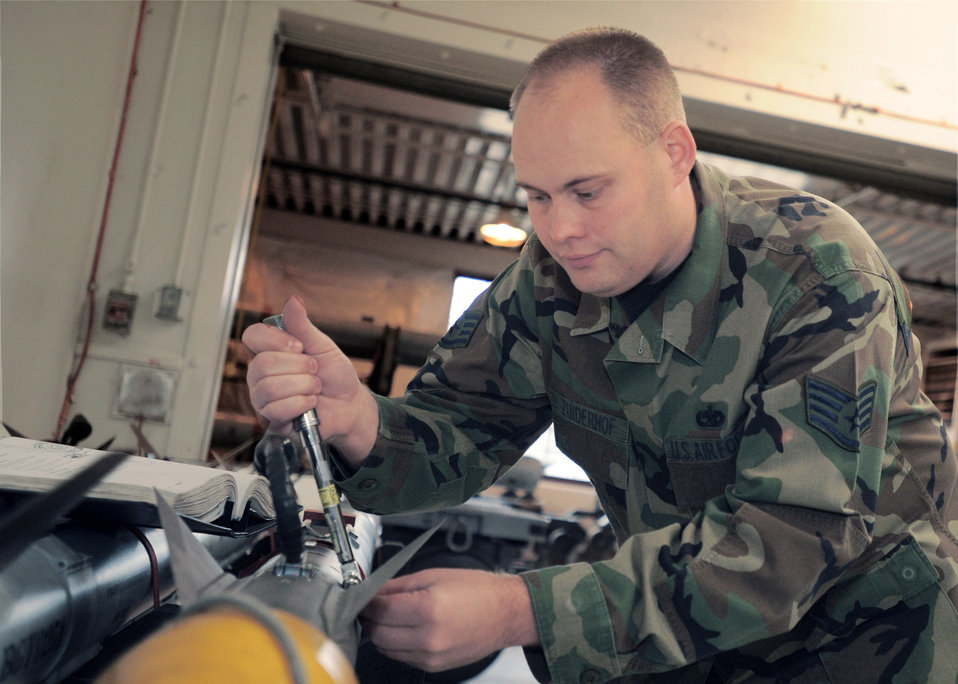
Arctic Warrior awarded DOD munitions honor

Staff Sgt. Wayne Zuiderhof torques the wing assembly of a weapon body May 14 at Elmendorf Air Force Base, Alaska. Sergeant Zuiderhof, assigned to the 3rd Equipment Maintenance Squadron Munitions Flight, was one of two recipients of the 2007 AIM-9X Cutting Edge Award.